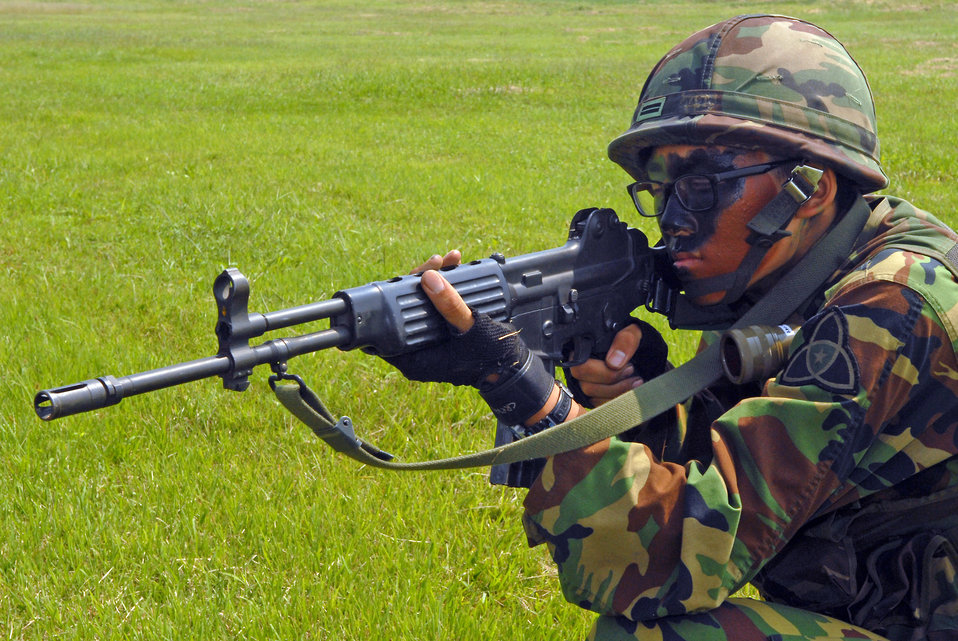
First responders

A South Korean airman stands guard at a simulated hostage exercise at the Gunsan Airport Sept. 17, 2010, at Kunsan Air Base, South Korea. The 8th Civil Engineer Squadron fire department participated in the annual exercise, which is designed to enhance counterterrorism and prepare emergency responders for real-life situations.